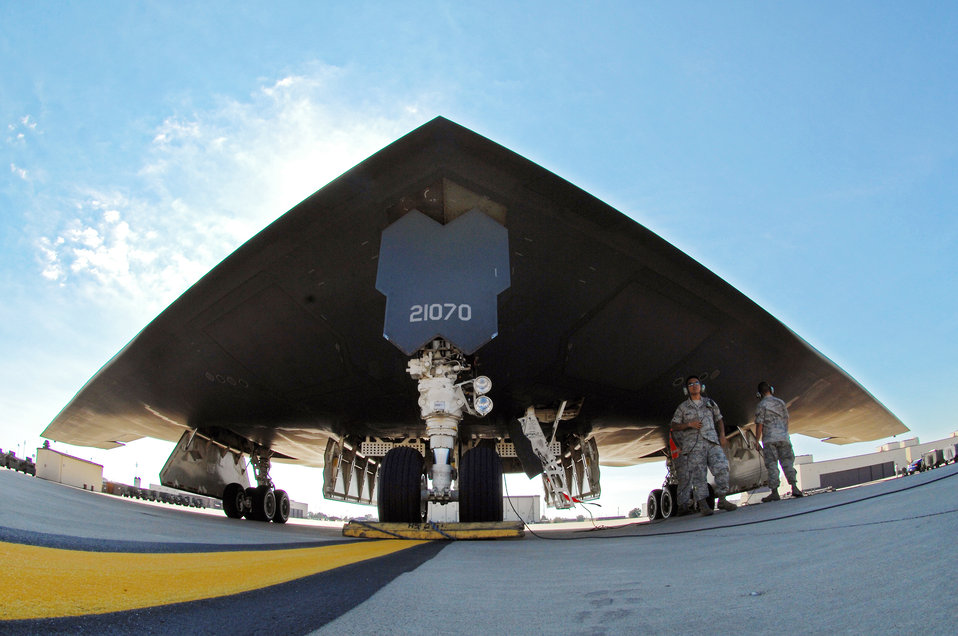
Shady business

Crew chiefs with the 509th Aircraft Maintenance Squadron prepare a B-2 Spirit for flight Aug. 24, 2009, at Whiteman Air Force Base, Mo. The B-2's primary mission is to attack time-critical targets early in a conflict to minimize an enemy's warfighting potential.